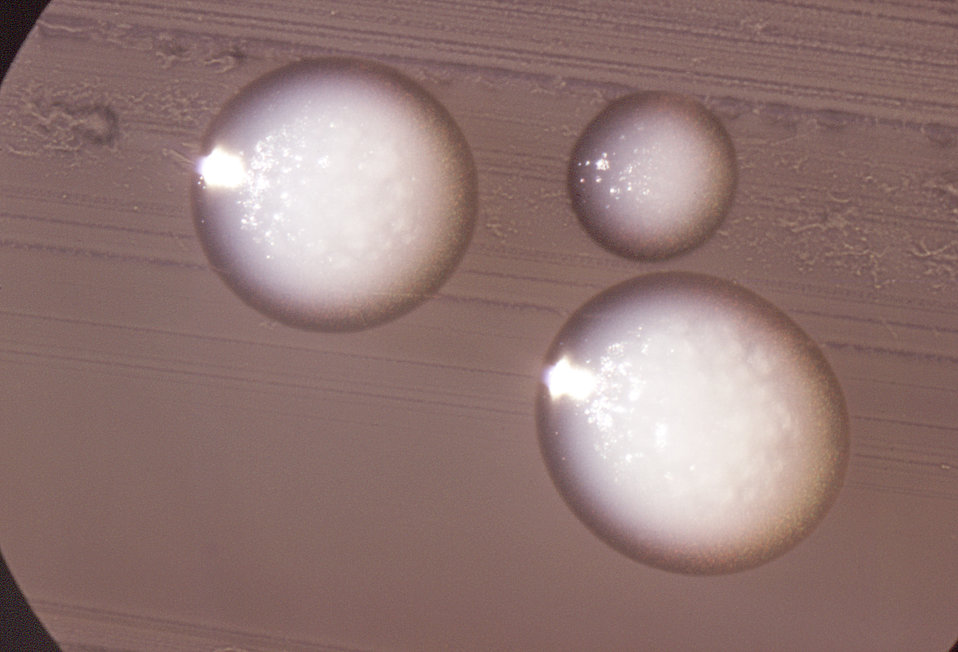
Magnified 15X, this image depicts the morphologic characteristics displayed by three Gram-positive, Actinomyces bovis bacterial microcolonies, of the strain, A-1109, which were cultivated, for a 48 - 72 hour time period, on an unknown culture medium.